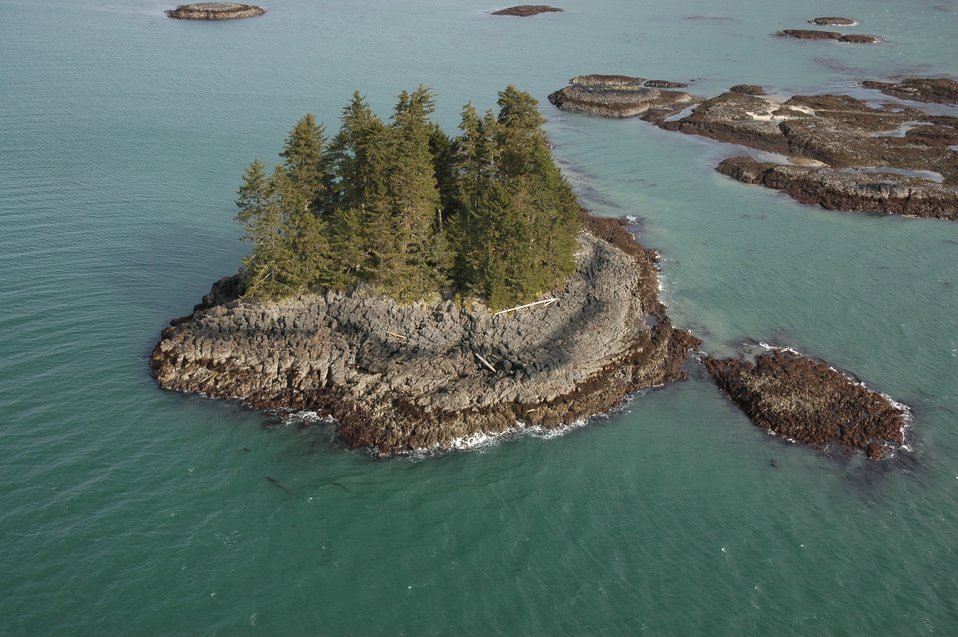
Aerial photograph. A small islet off the larger Kupreanof Island showing a unique erosive pattern in what might be columnar basalt.